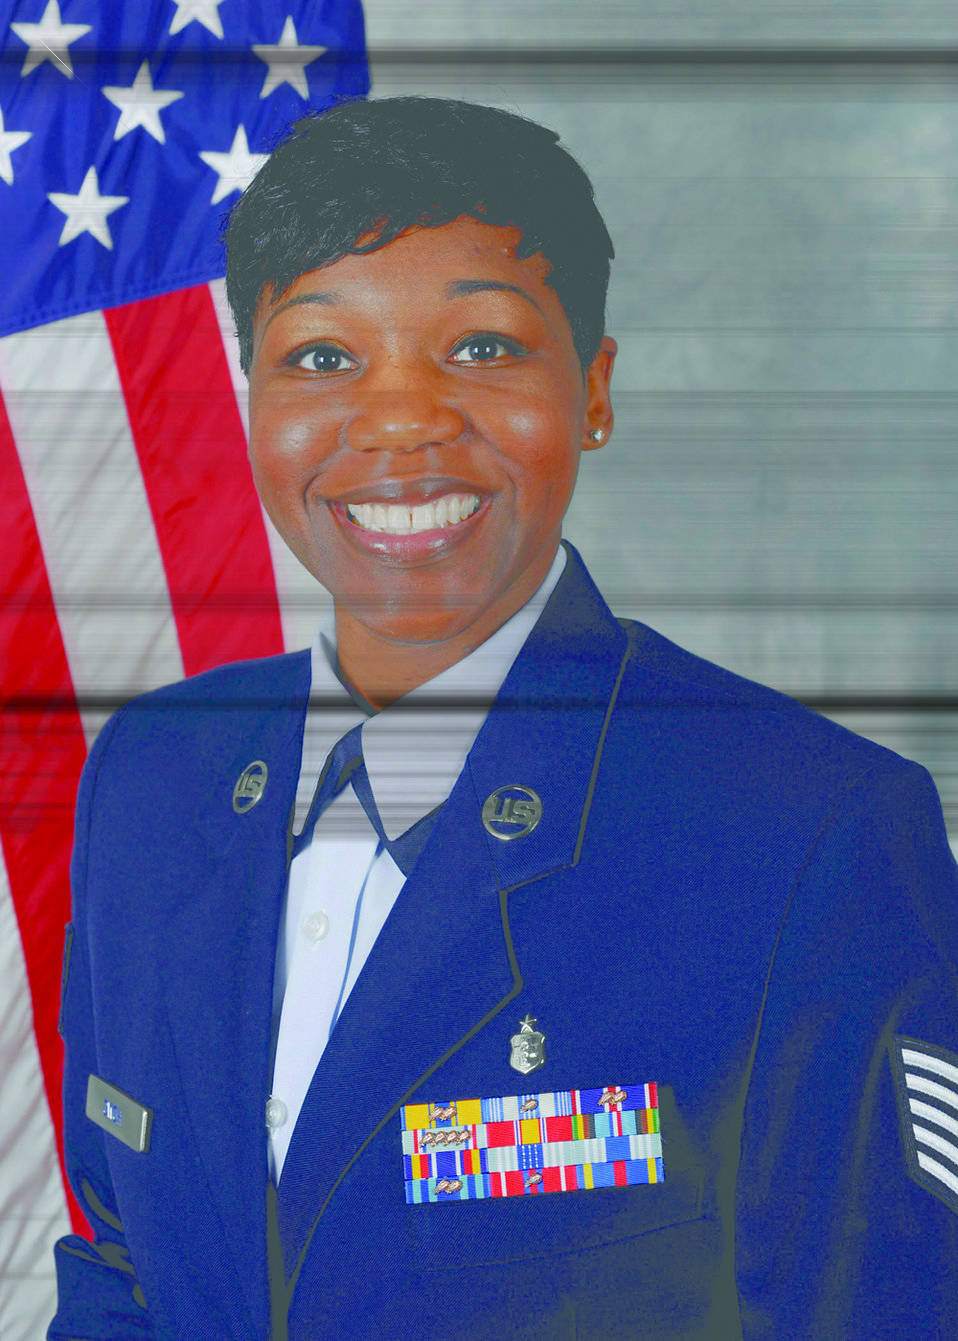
Lajes Airman receives DOD image award

Tech. Sgt. Shari Owoh was recognized as the Air Force recipient of the 2011 DOD National Image Meritorious Service Award April 28, 2011, during a ceremony in Orlando, Fla. Sergeant Owoh is assigned to the 65th Air Base Wing protocol office.